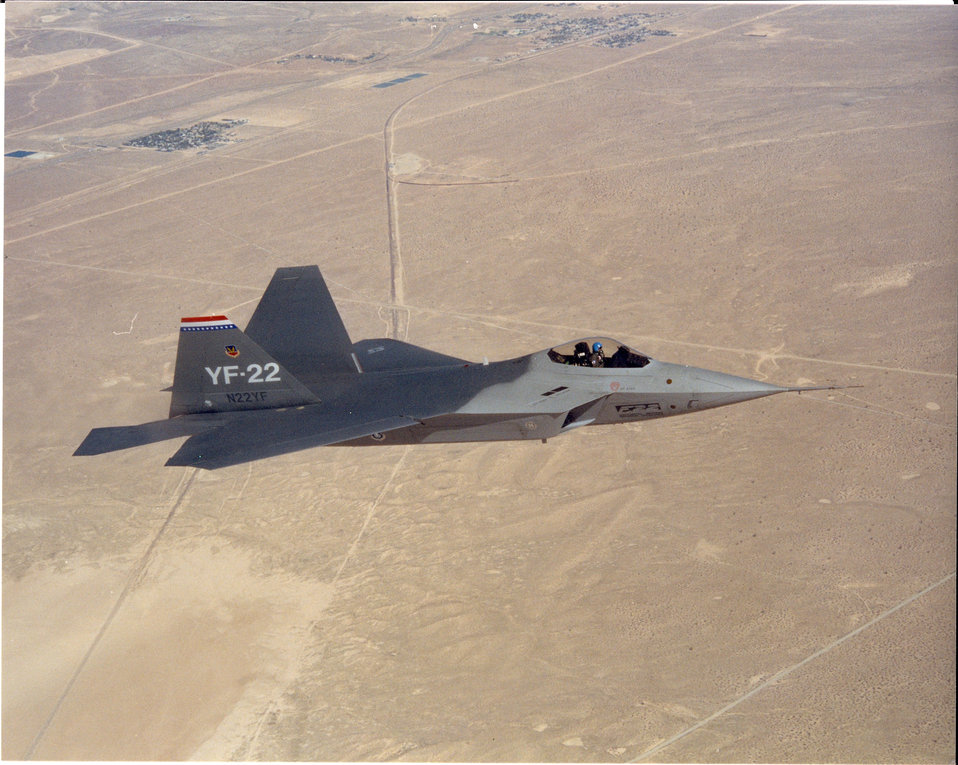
YF-22A Advanced Technology Fighter

On Nov. 3, 1990, the YF-22A Advanced Technology Fighter prototype became the first fighter-type aircraft to achieve sustained supersonic flight without employing afterburner, as it attained